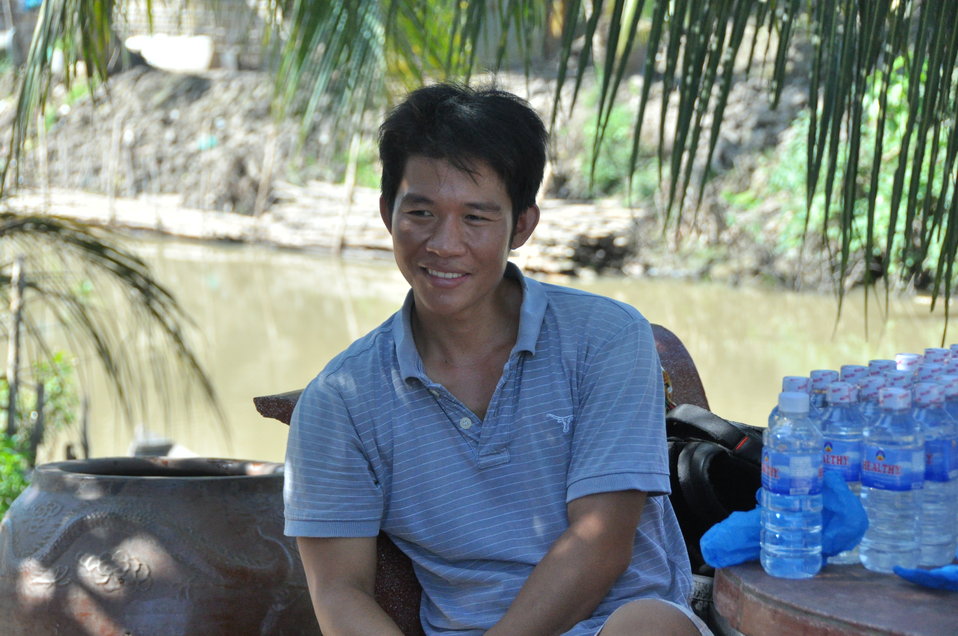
Local duck farmers discuss implementation of biosecurity standards in Can Tho

USAID Vietnam